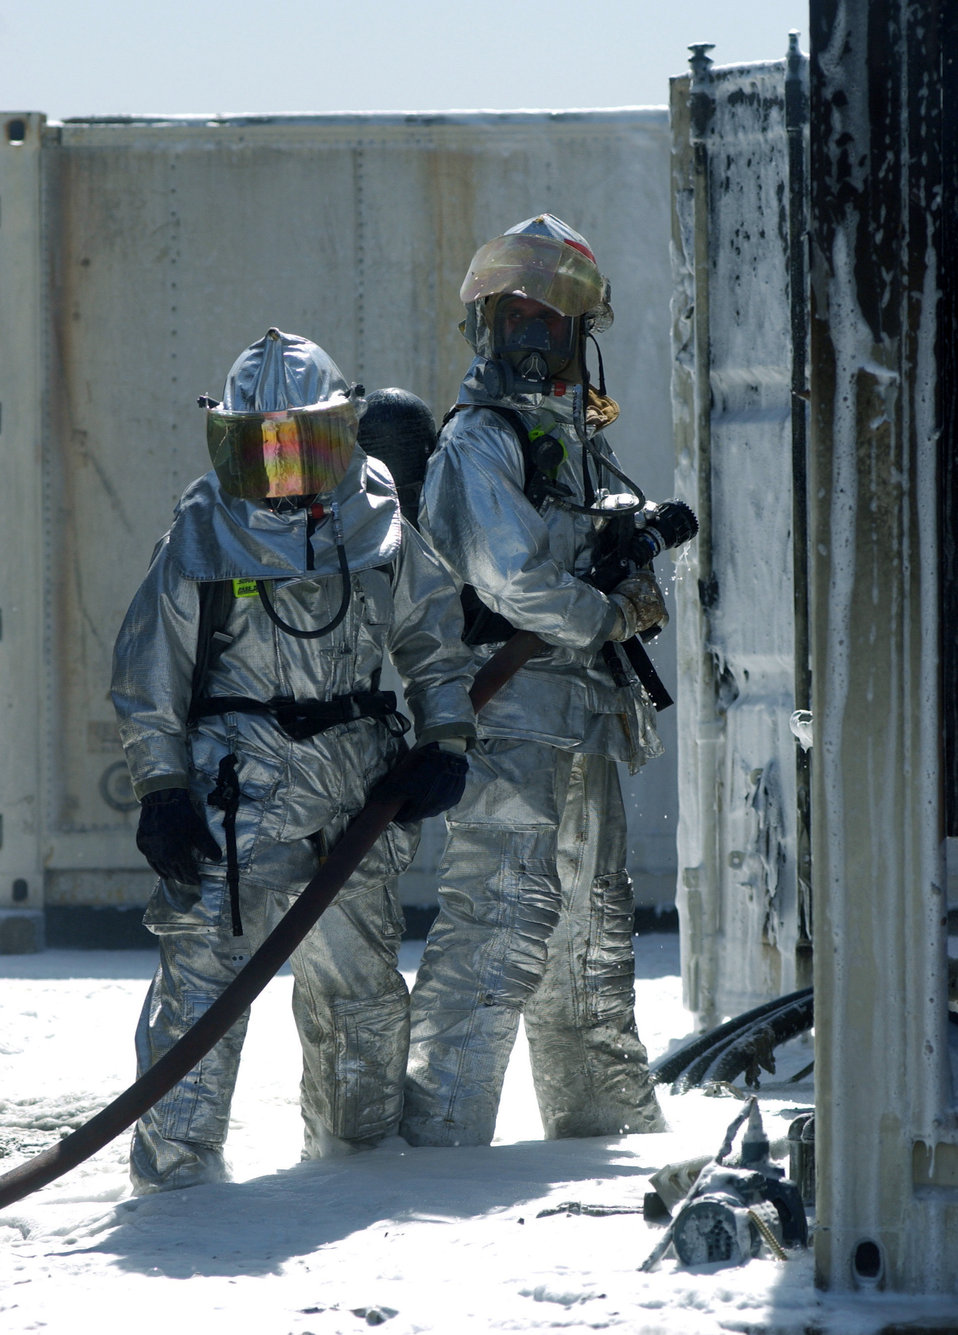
Firefighters tackle blaze

KIRKUK AIR BASE, Iraq -- Staff Sgt. Robert Fox and Senior Airman William Garrett look back to their fire truck after they put out a fire near the dining facility here Sept. 14. A fuel truck filling a tank made a spark that triggered the fire. The Airmen are assigned to the 506th Expeditionary Civil Engineer Squadron's fire department.